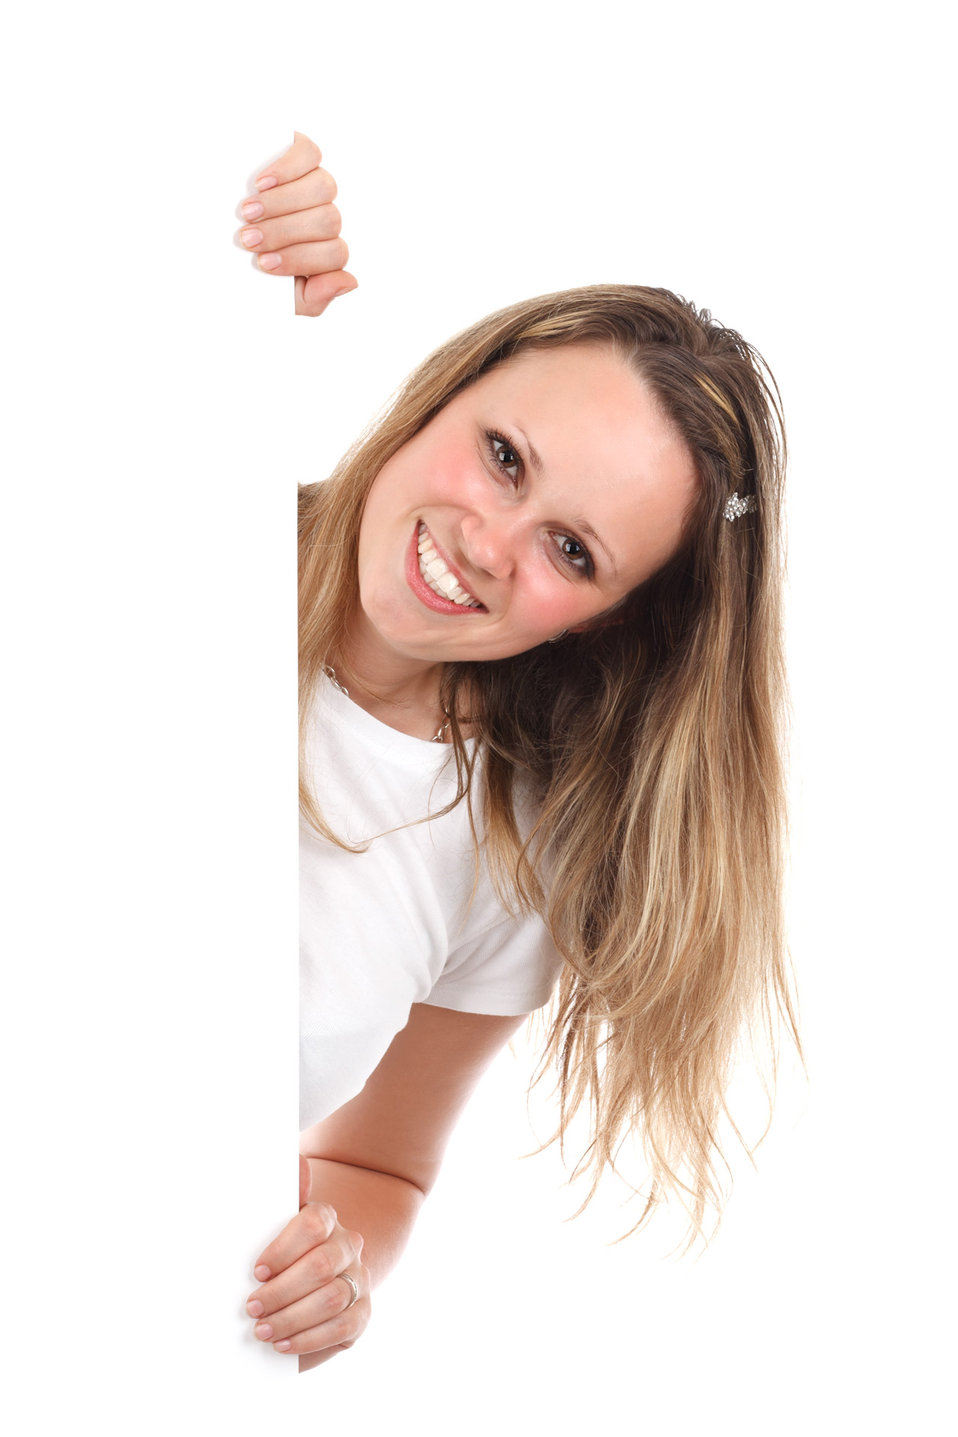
Looking from behind a board

Young woman looking from behind a white board.